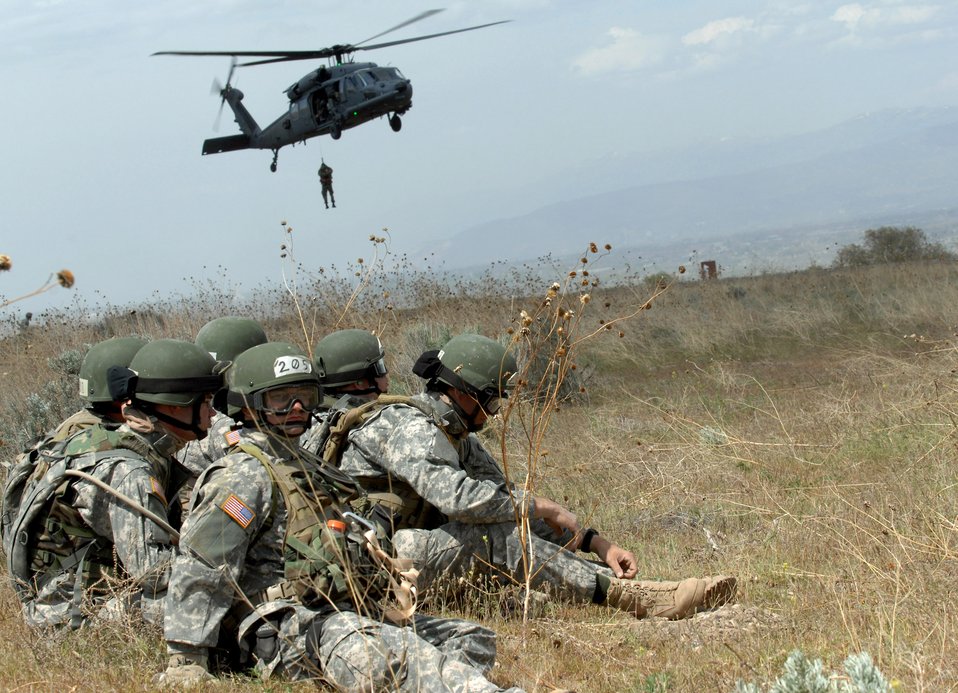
Search and rescue training

Soldiers from the Utah National Guard unit wait to be hoisted on board an Air Force HH-60 Pave Hawk helicopter over the Utah Test and Training Range during a combat search and rescue integration exercise held May 2 to 5 in Sandy, Utah. Members of the 34th Weapons Squadron Nellis Air Force Base, Nev., led the search and recovery training. The objective of the exercise was to expand expertise and integration with Utah's 211th Aviation Group AH-64 Apache Joint Rotary Wing, 4th Fighter Squadron F-16 Fighting Falcon Striker assets, special operations forces and conduct extensive joint CSAR operations against surface-to-air threats.